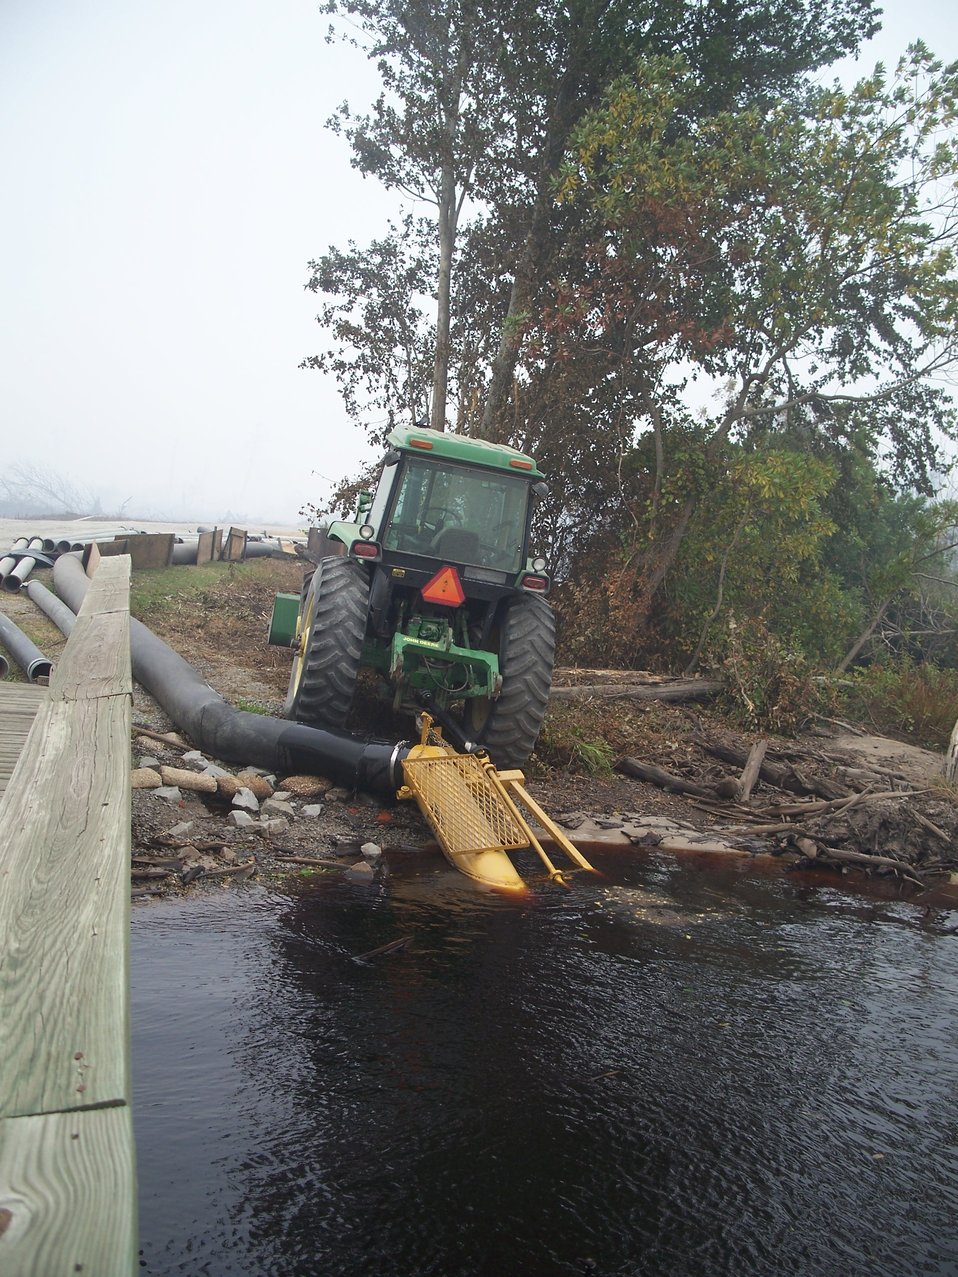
Drafting from Lake Drummond

Suffolk, VA, August 2011: A pump drafts water from Lake Drummond to flood ditches to saturate the peat fire burning in the Lateral West Fire on Great Dismal Swamp National Wildlife Refuge.